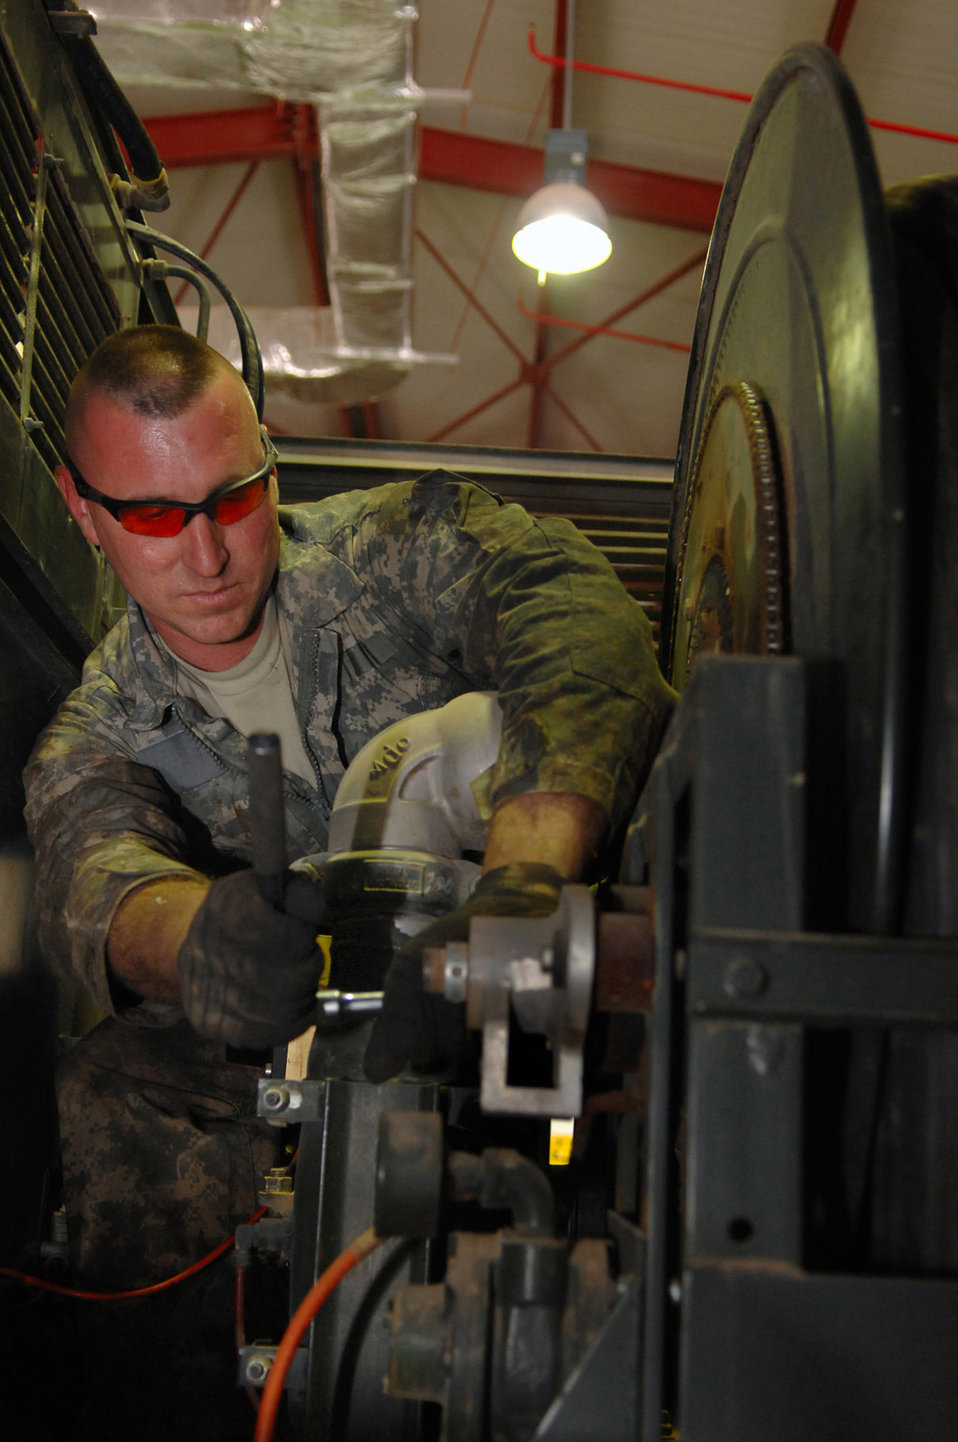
Keeping them rolling

Staff Sgt. Jason Jablonowski tightens the nose reel swivel on a refueling truck that allows the refueling line to roll out of the truck smoothly to aircraft waiting to be refueled March 8 at Balad Air Base, Iraq. Sergeant Jablonowski, a 332nd Expeditionary Logistics Readiness Squadron refueling truck mechanic, is deployed from Luke Air Force Base, Ariz.